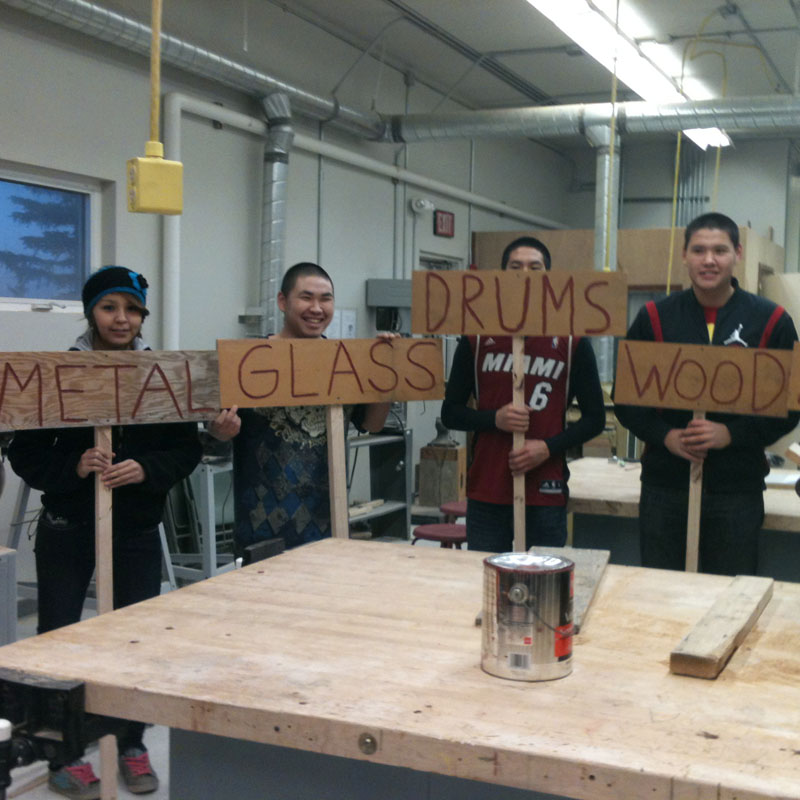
Recycyling in Alaska

At EPA, #WeRecycle. Learn how you can too: www2.epa.gov/recycle